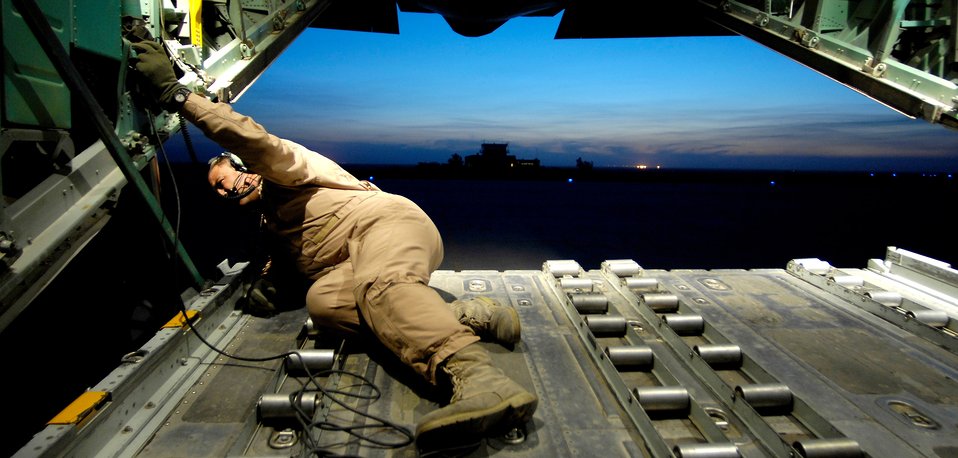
Everything checks out

An Iraqi air force C-130 Hercules loadmaster checks the right side of the plane as the engines are started before takeoff from Basra Air Base, Iraq. The plane and crew are part of the 23rd Transport Squadron at New Al Muthana Air Base.